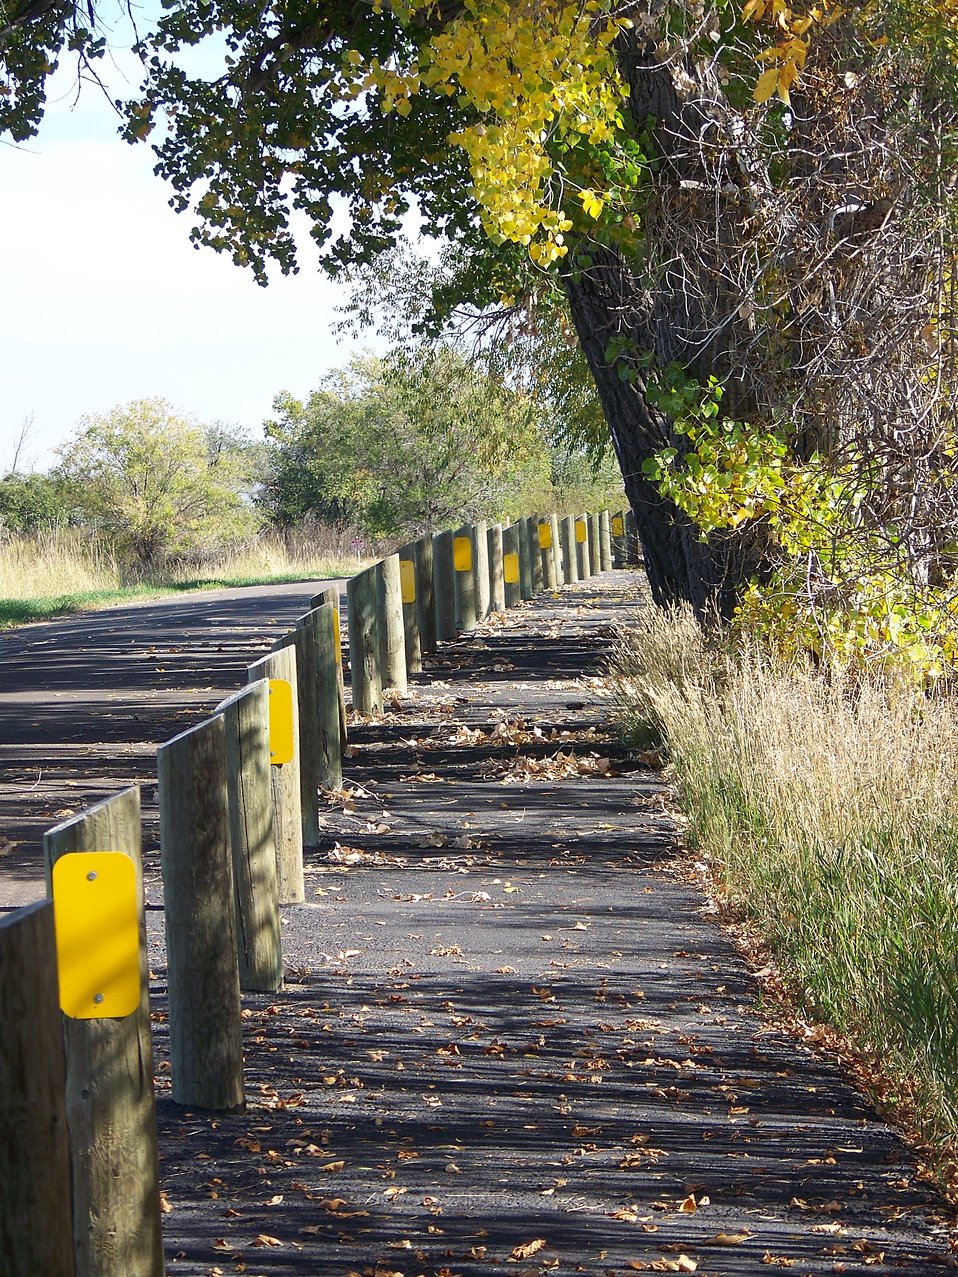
Display Pond Trail

Hiking trail on Bowdoin NWR